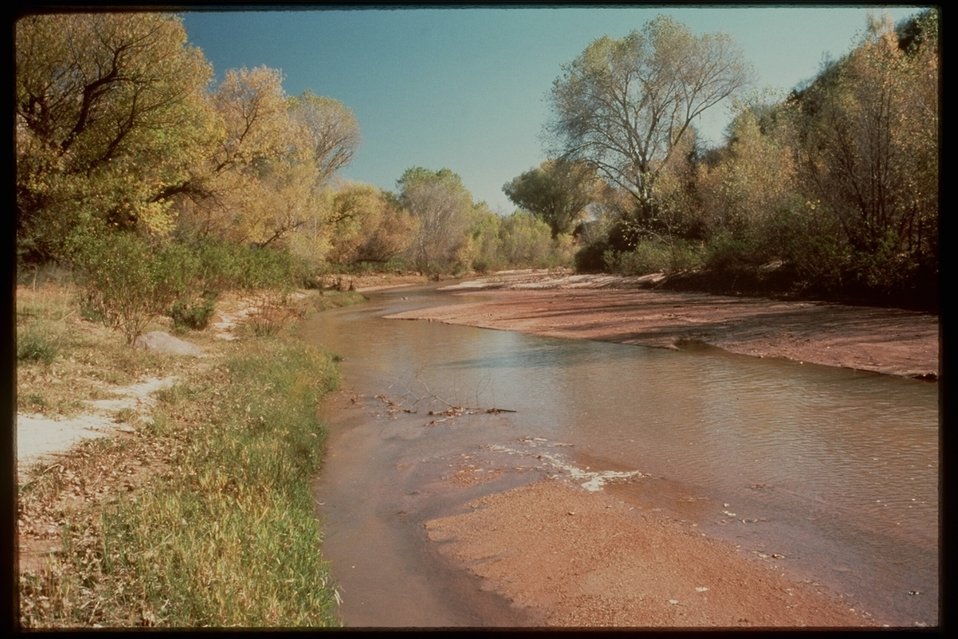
The San Pedro Riparian National Conservation Area, containing about 40 miles of the upper San Pedro River, was designated by Congress as a National Conservation Area (NCA) on November 18, 1988. The primary purpose for the designation is to protect and enhance the desert riparian ecosystem, a rare remnant of what was once an extensive network of similar riparian systems throughout the southwest. The NCA contains more than 250 recorded prehistoric and historic sites, including the remnants of a Spanish fort called the Presidio Santa Cruz de Terrenate built in 1780.